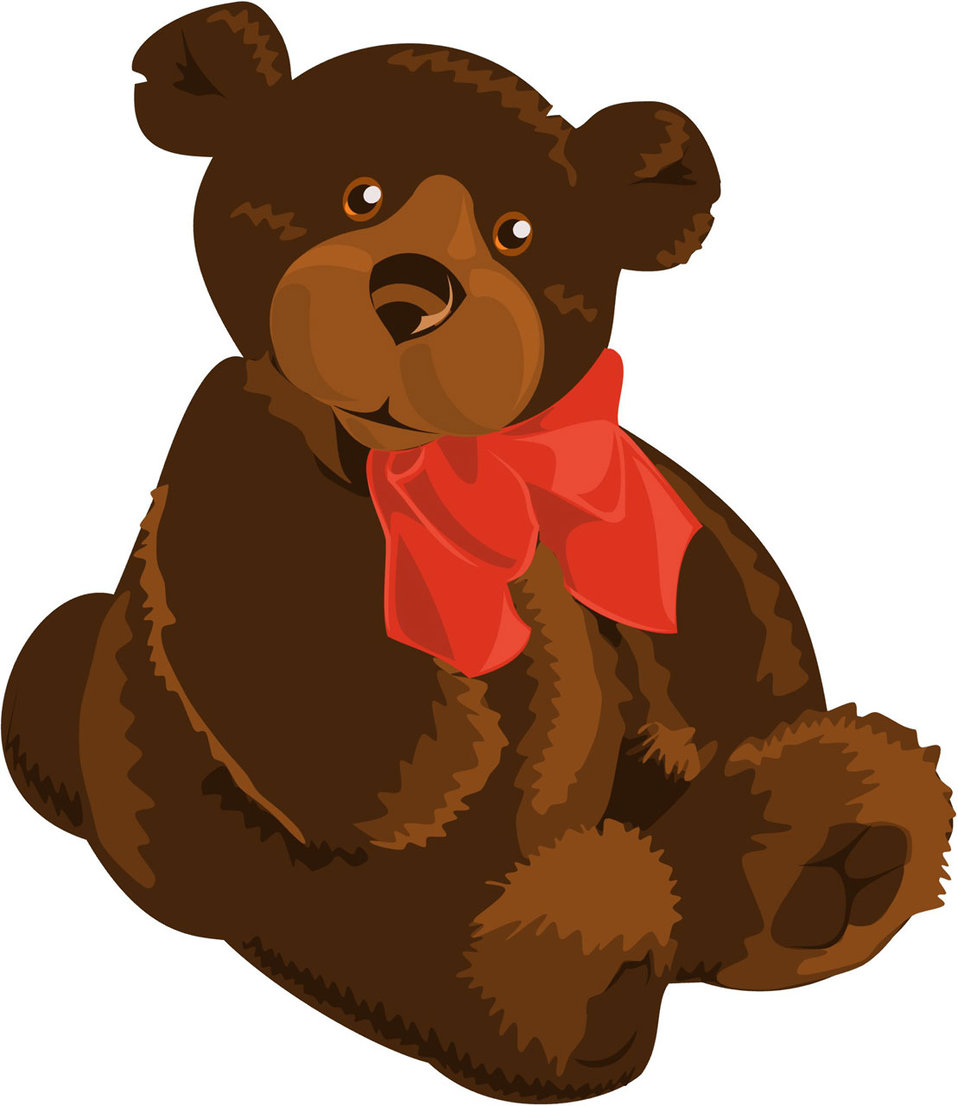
Brown teddy bear

Original vector art of a teddy bear.